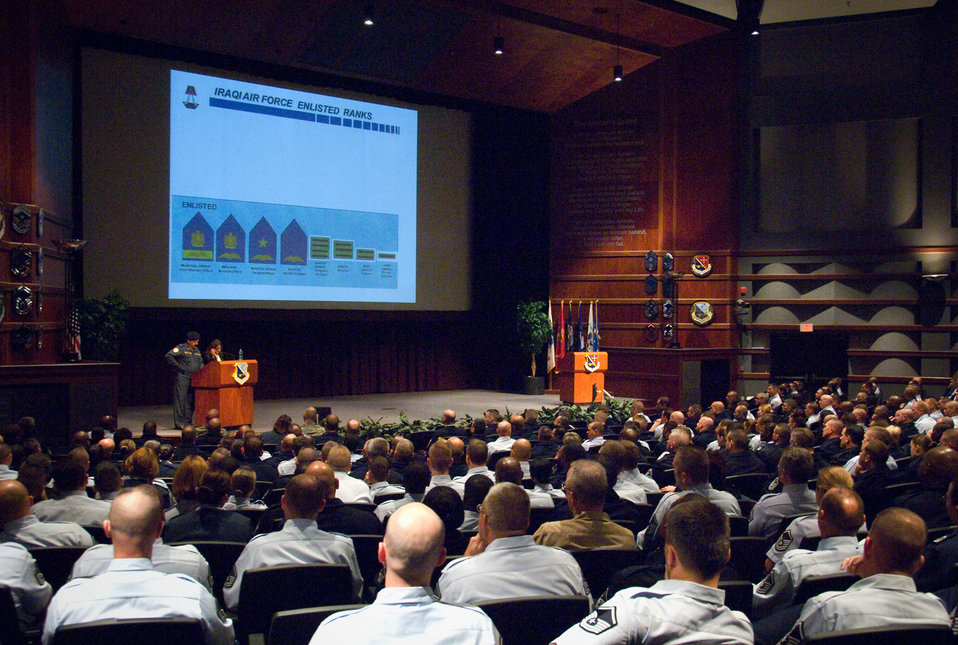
CMSAF Roy and counterpart visit Maxwell

The chief master sergeant of the Iraqi air force speaks Dec. 7, 2010, at the U.S. Air Force's senior NCO academy at Maxwell Air Force Base, Ala. During the visit, his first to the U.S., the chief heard from senior NCO academy officials and officials from other elements of Air University, regarding how U.S. Air Force officials educate their Airmen across the spectrum of ranks. The chief was scheduled to make stops at other Air Education and Training Command bases during his time in the U.S.